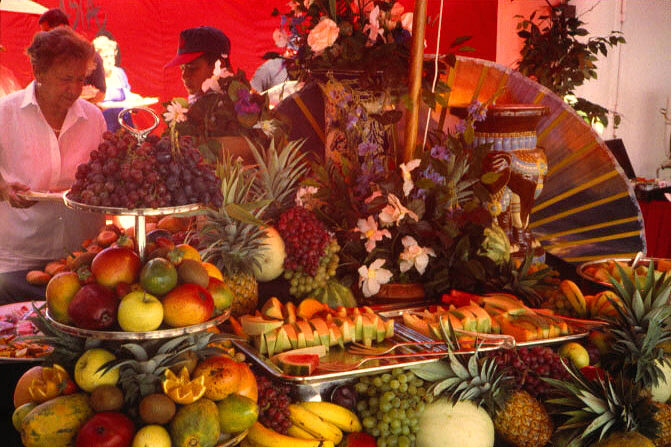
Fresh fruit display on cruise ship.